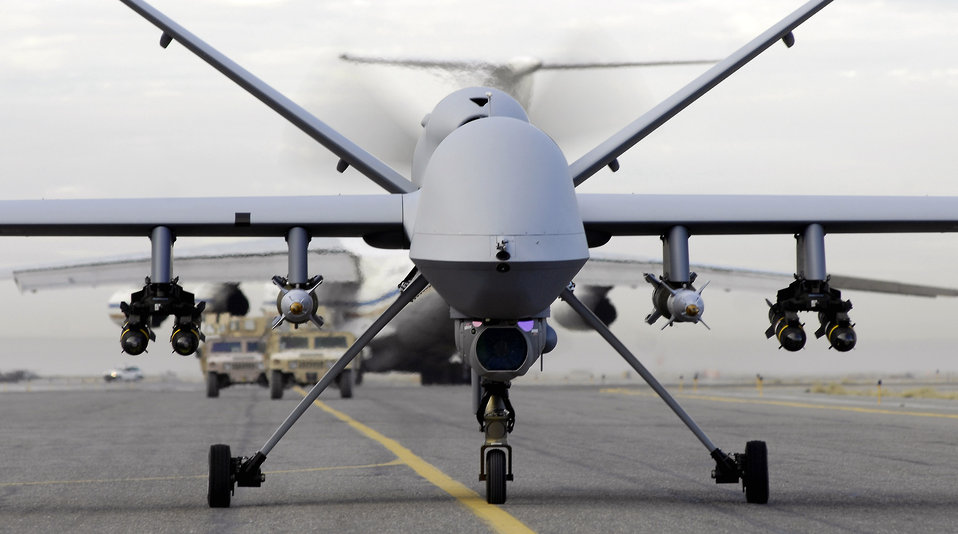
Oct. 28 airpower summary: Reaper fires missiles

A fully armed MQ-9 Reaper taxis down a runway in Southwest Asia. The Reaper's primary mission is as a persistent hunter-killer against emerging targets.